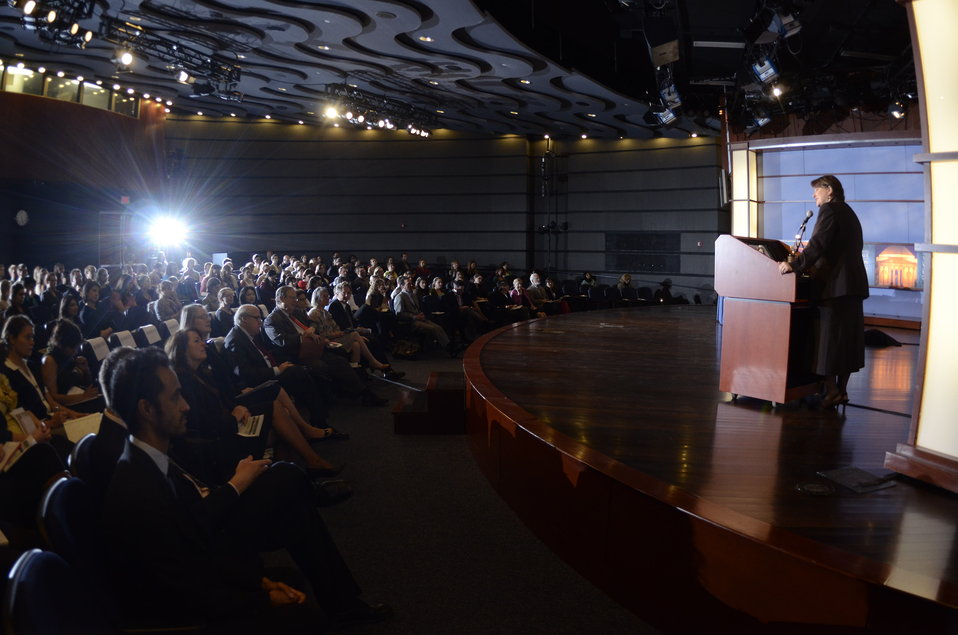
Agriculture Deputy Secretary Dr. Kathleen Merrigan keynote speaker 'Shaping the Farm Bill for a Sustainable Future.' Forum at The Trachtenberg School of Public Policy and Public Administration, George Washington University in Washington, D.C., on Thursday, March 1, 2012.